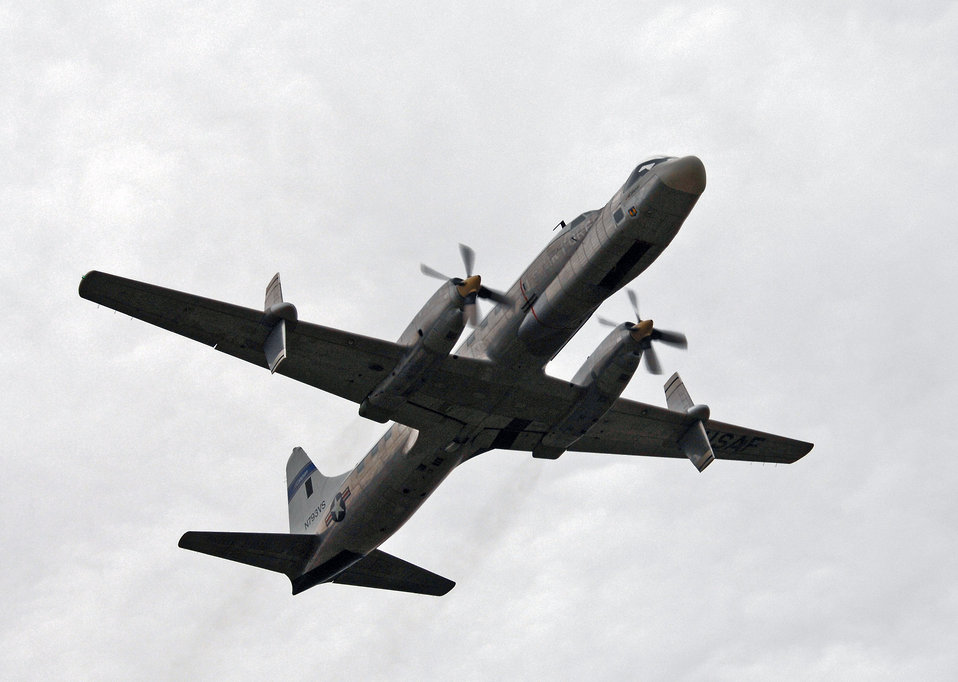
In-Flight Simulator's last flight

The U.S. Air Force C-131 known as the Total-In-Flight Simulator made its final flight to the National Museum of the United States Air Force at Wright-Patterson Air Force Base, Ohio, Nov. 7. The unusual aircraft flew some 2,500 research flights and contributed to the advancement of many of the flight technologies integral to today's fleet. Prior to its retirement, the TIFS, a 1955 Convair, was the oldest operating aircraft in the Air Force inventory.